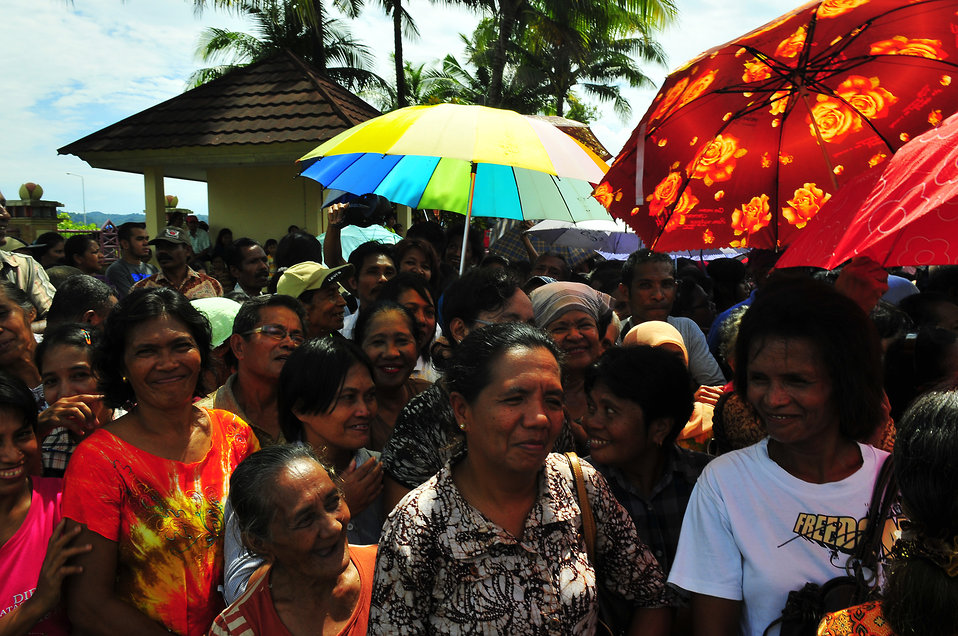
Local Indonesian residents wait to be helped during a Pacific Partnership 2010 medical civic action program held at Waihaong on July 29, 2010. The Military Sealift Command hospital ship USNS Mercy (T-AH 19) is in Ambon, Indonesia, participating in Sail Banda 2010. Mercy’s participation features medical and dental care clinics and construction projects in and around Ambon, as well as on Seram Island.